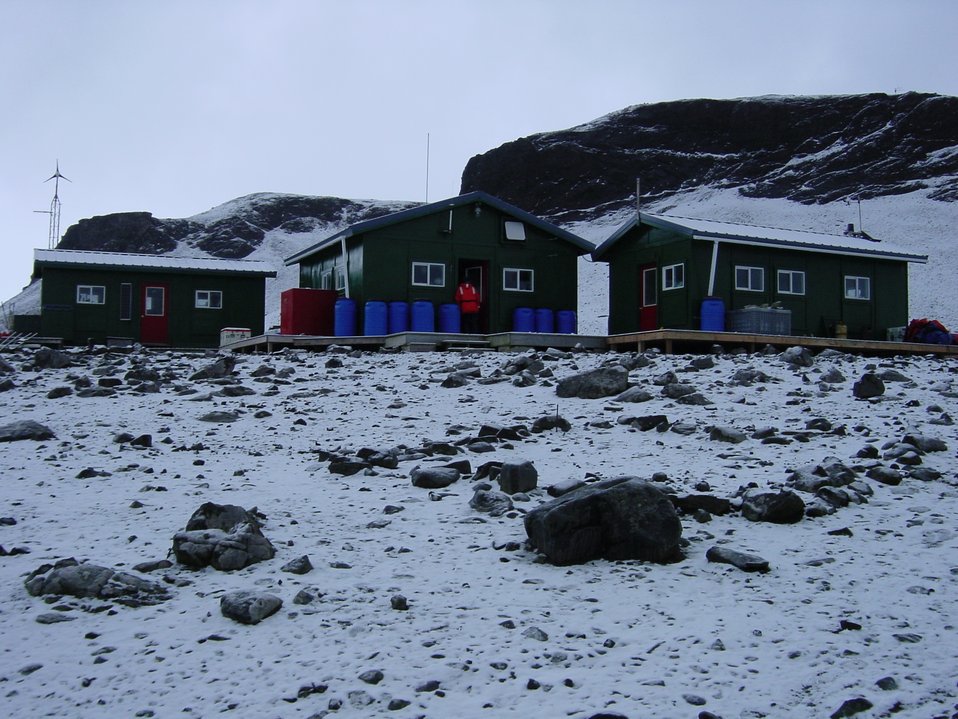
A base camp for observing penguins and marine mammals as well as other scientific observations.